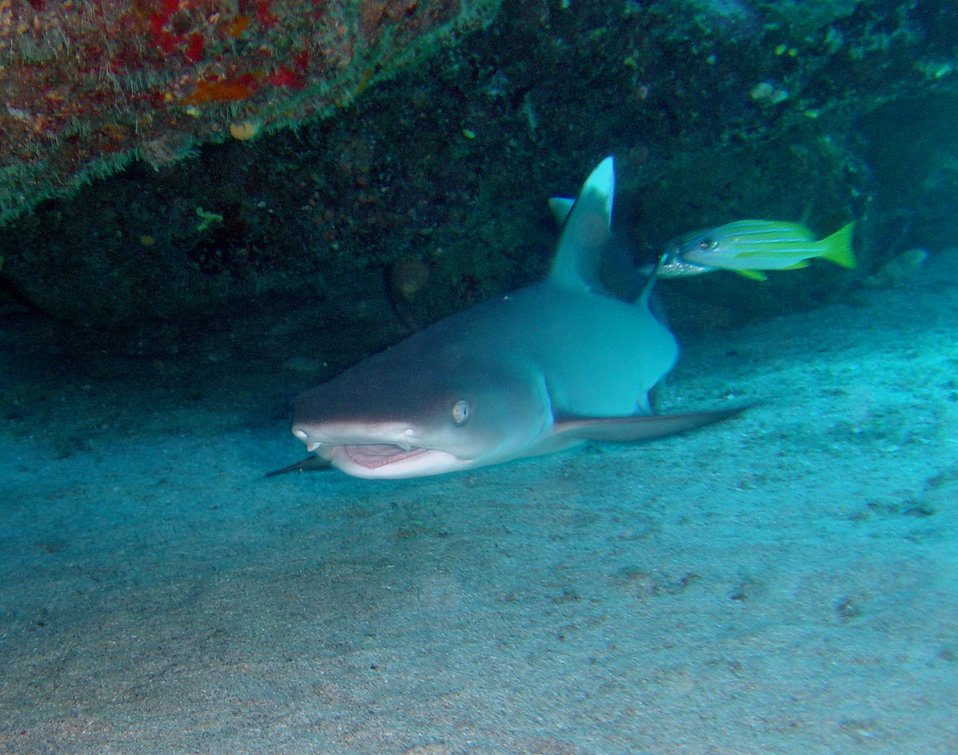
Whitetip reef shark (Triaenodon obesus)